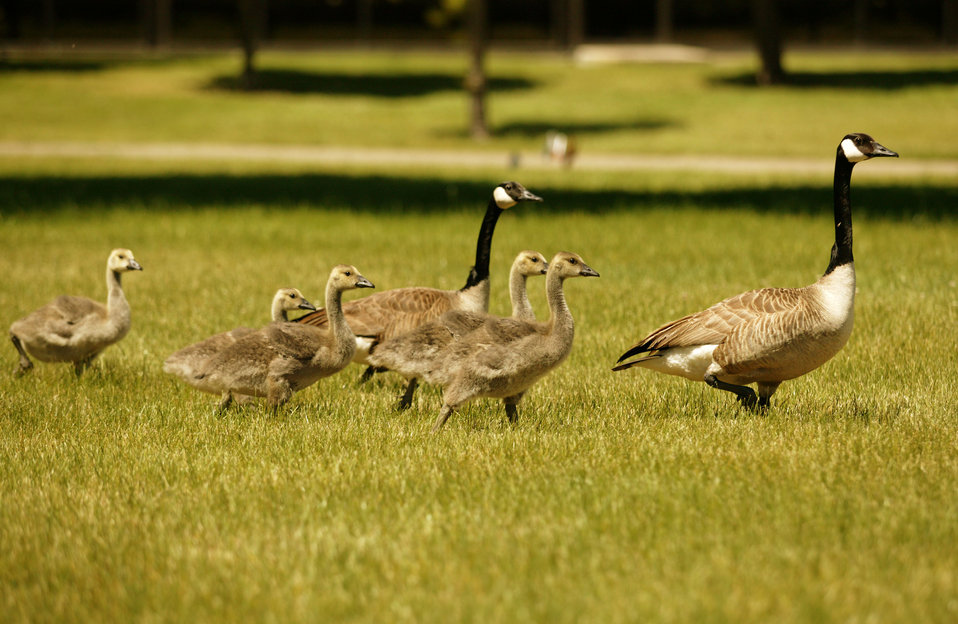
This family of Canada geese is just one of many that call Lawrence Livermore National Laboratory their home. Each spring, they return to the grassy areas and deliver their offspring.